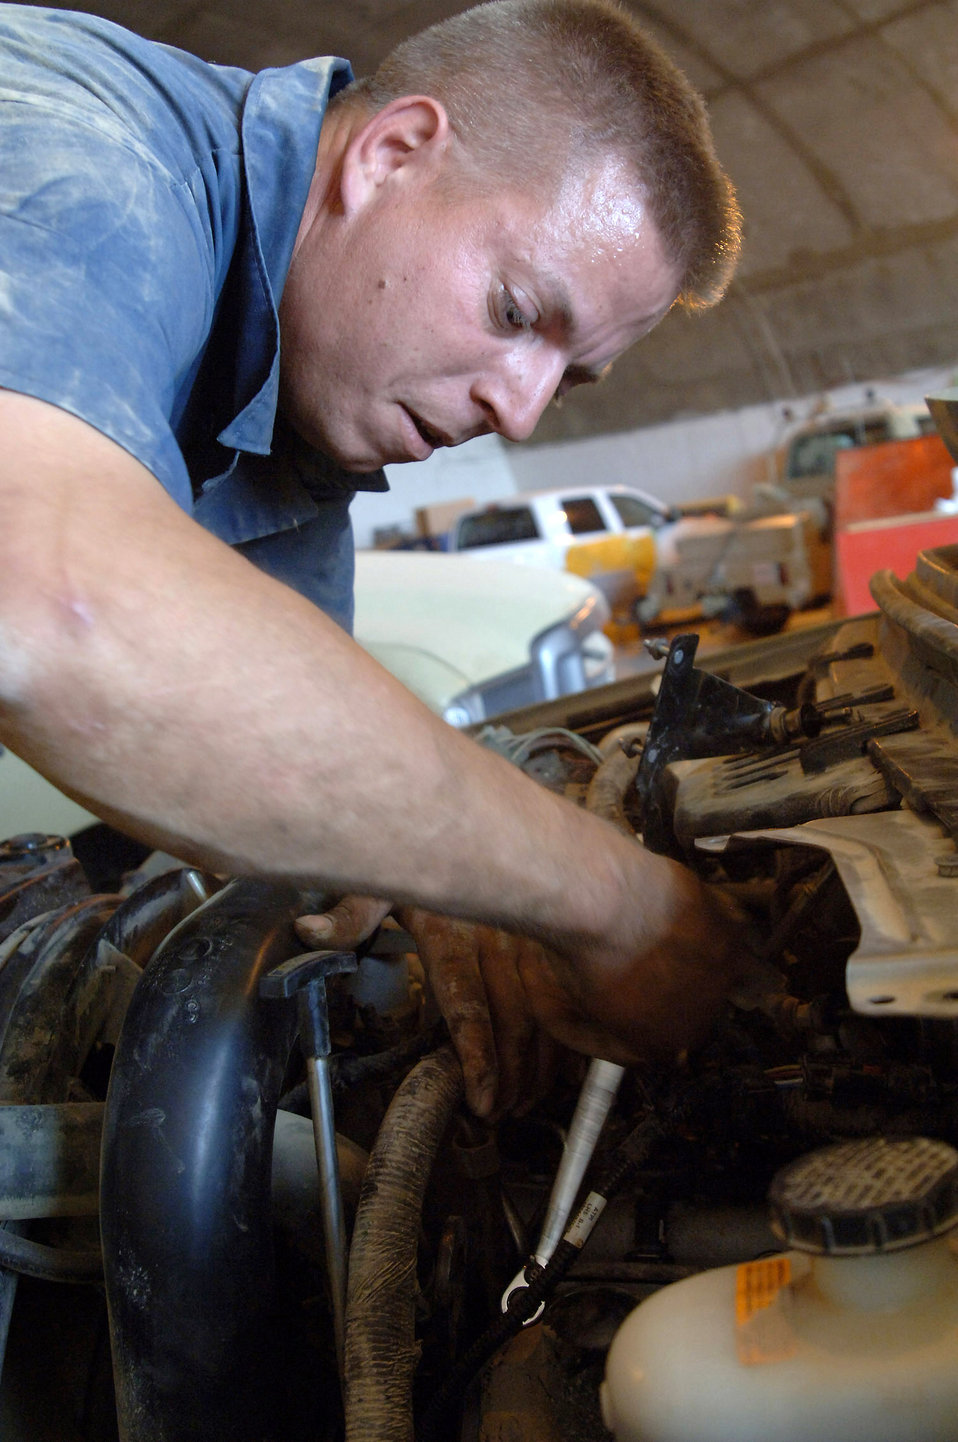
Vehicle maintainers keep Balad rollin'

Staff Sgt. Timothy Lewis removes the valve cover off of the engine of a flightline tow truck April 25 at Balad Air Base, Iraq. Sergeant Lewis is a vehicle maintenance technician with the 332nd Expeditionary Logistics Readiness Squadron deployed from Minot Air Force Base, N.D.